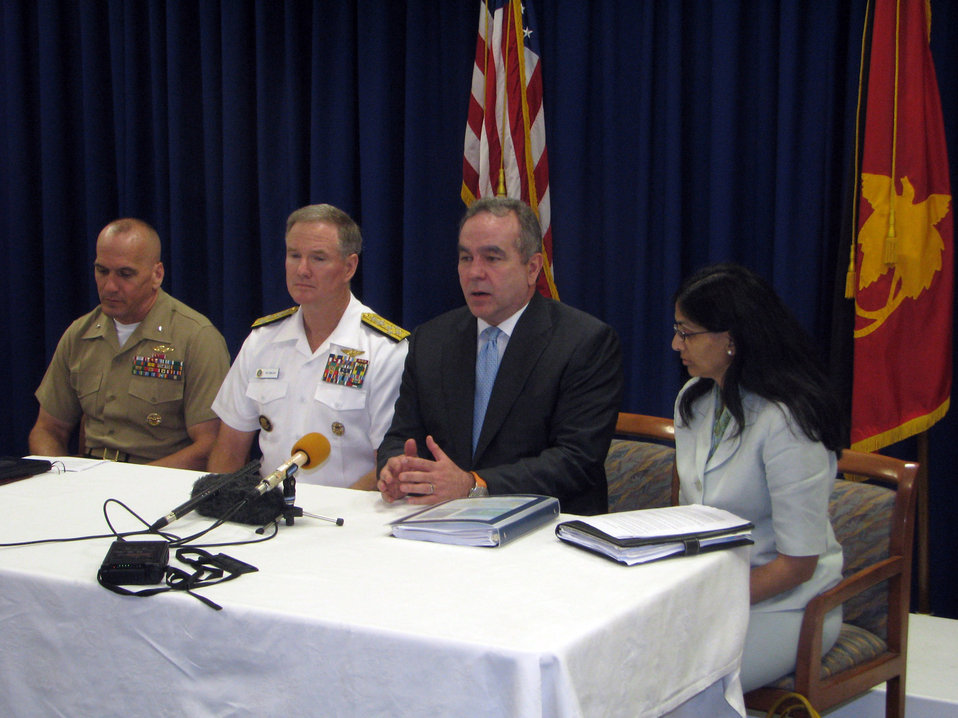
Assistant Secretary Campbell Addresses the Media in Papua New Guinea

Assistant Secretary of State for East Asian and Pacific Affairs Kurt Campbell, right center, addresses the media during a press conference at the U.S. Embassy in Port Moresby, Papua New Guinea, on June 30, 2011. Assistant Secretary Campbell is leading a U.S. delegation visiting nations throughout the South Pacific that includes Adm. Patrick Walsh, commander of U.S. Pacific Fleet, left center, Office of the Secretary of Defense South/Southeast Asia Principal Director, Marine Corps Brig. Gen. Richard Simcock, left, and U.S. Agency for International Development (USAID) Assistant Administrator Nisha Biswal, right. The delegation is engaging in discussions to enhance bilateral political, economic, and security relations in the region.